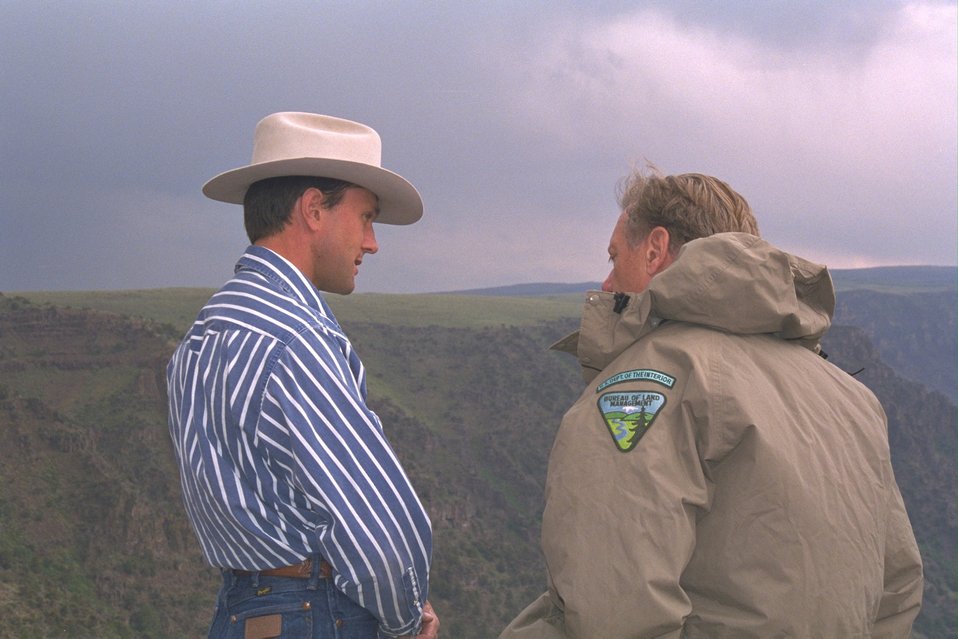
Rancher, Stacie Davies, talks with Secretary Babbitt about Steens Designation issues at Big Indian Gorge.